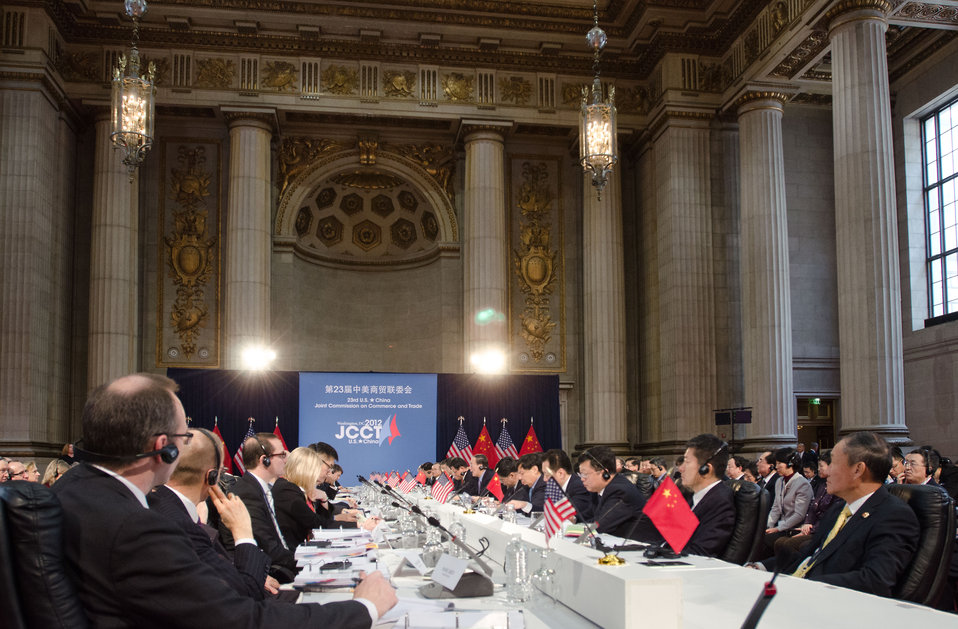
Chinese Vice Premier Wang Qishan gives his opening speech to the 23rd Session of the U.S. China Joint Commission on Commerce and Trade (JCCT) at the Andrew W. Mellon Auditorium in Washington, D.C. on Wednesday, Dec. 19, 2012. The JCCT holds high-level plenary meetings on an annual basis to review progress made by working groups that focus on a wide variety of trade issues. These working groups meet throughout the year to address topics such as intellectual property rights, agriculture, pharmaceuticals and medical devices, information technology, tourism, commercial law, environment, and statistics. Established in 1983, the JCCT is the main forum for addressing bilateral trade issues and promoting commercial opportunities between the United States and China. The 2011 JCCT meeting was held in Chengdu, China, where China agreed, among other issues, to improve intellectual property enforcement, delink innovation policies to government procurement preferences, and provide a fair and level playing field in China’s Strategic Emerging Industries.